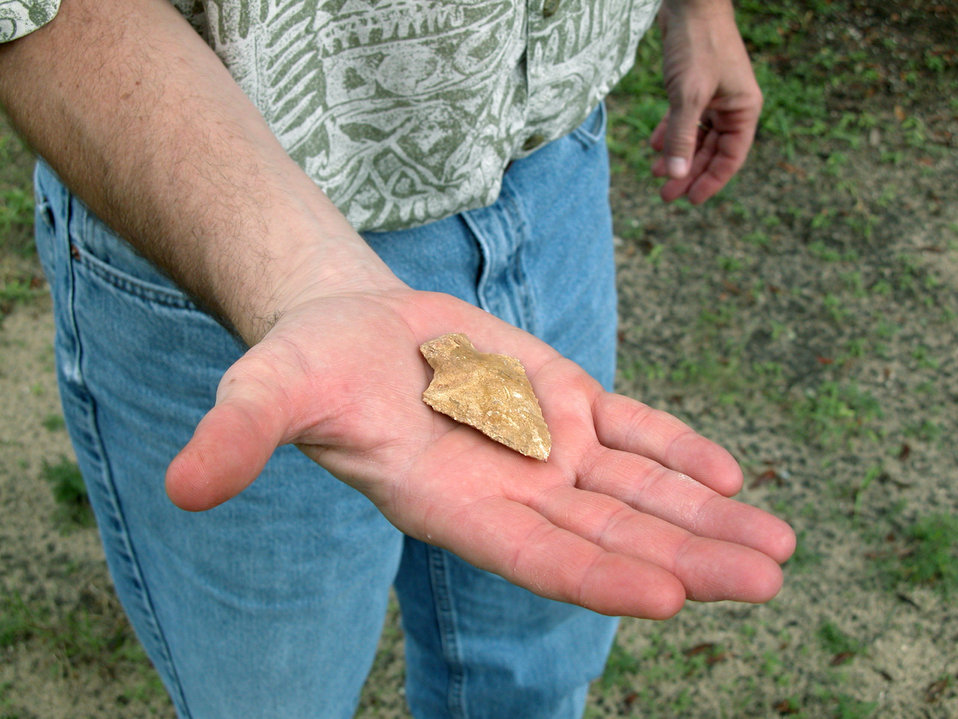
Boy discovers arrowhead

EGLIN AIR FORCE BASE, Eglin -- Mark Stanley displays the American Indian arrowhead found by 6-year-old John David Lilley. The arrowhead, which dates back to 3,000 to 2,000 B.C., was probably used by descendants of the 18th or 19th century Creeks or Seminoles. Mr. Stanley is an archaeologist with the environmental program directorate.